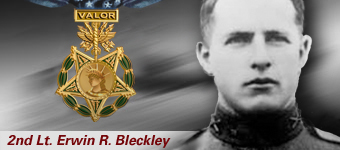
2nd Lt. Erwin Bleckley, Medal of Honor recipient, World War I